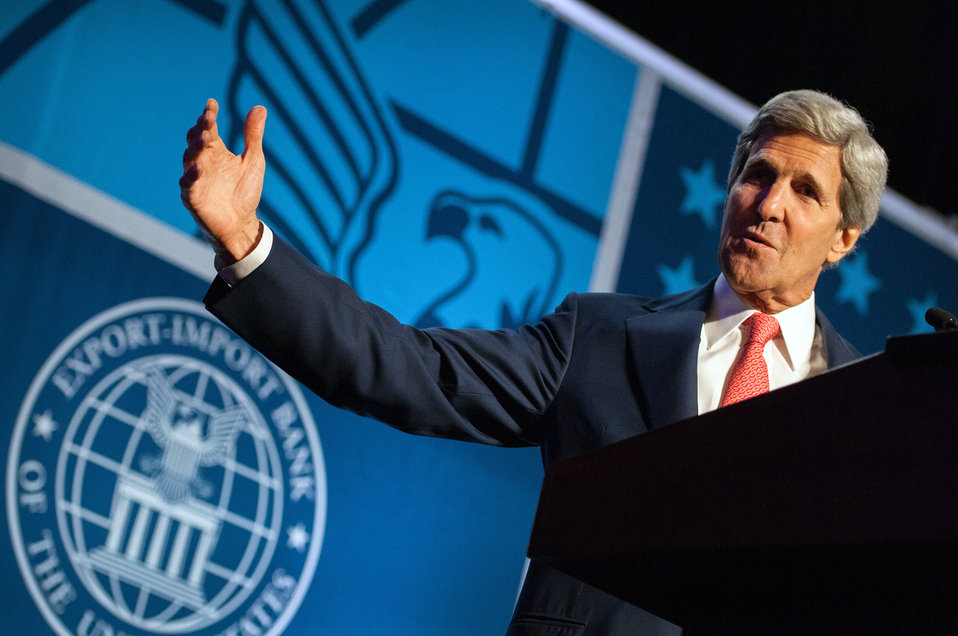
Secretary Kerry Delivers Remarks at the Export-Import Bank Annual Conference

U.S. Secretary of State John Kerry delivers remarks at the Export-Import Bank Annual Conference in Washington, D.C., on April 24, 2014.